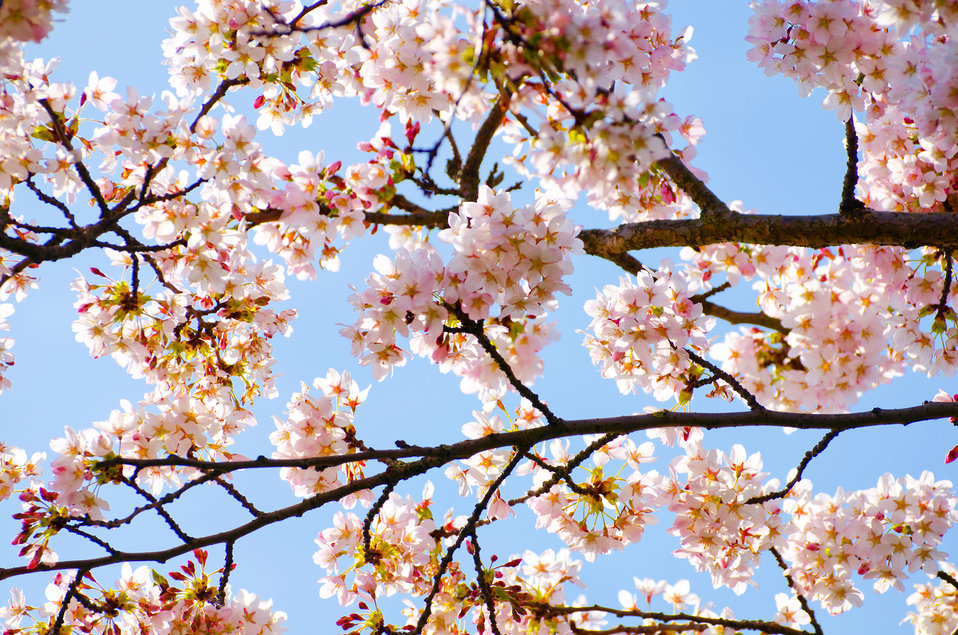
Spring tree.